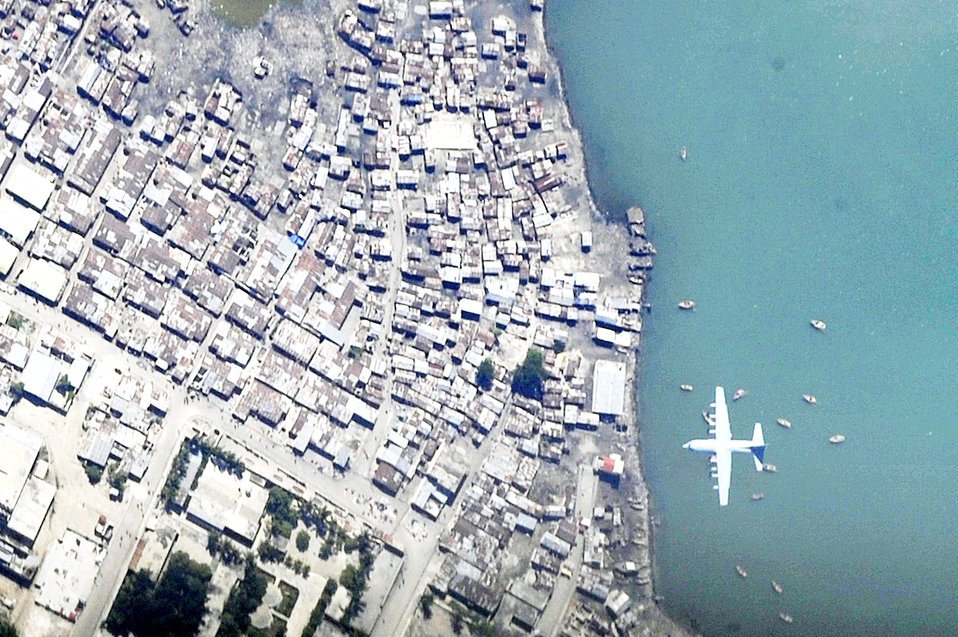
Bird's eye view of the Hercules

A C-130 Hercules makes a final approach into Toussaint L'Ouverture International Airport at Port-au-Prince, Haiti, Jan 16, 2010, as viewed by an OC-135B Open Skies aircraft. The OC-135B used 10,000 feet of film at an altitude of 15,000 feet to photograph the devastation caused by the 7.0-earthquake.